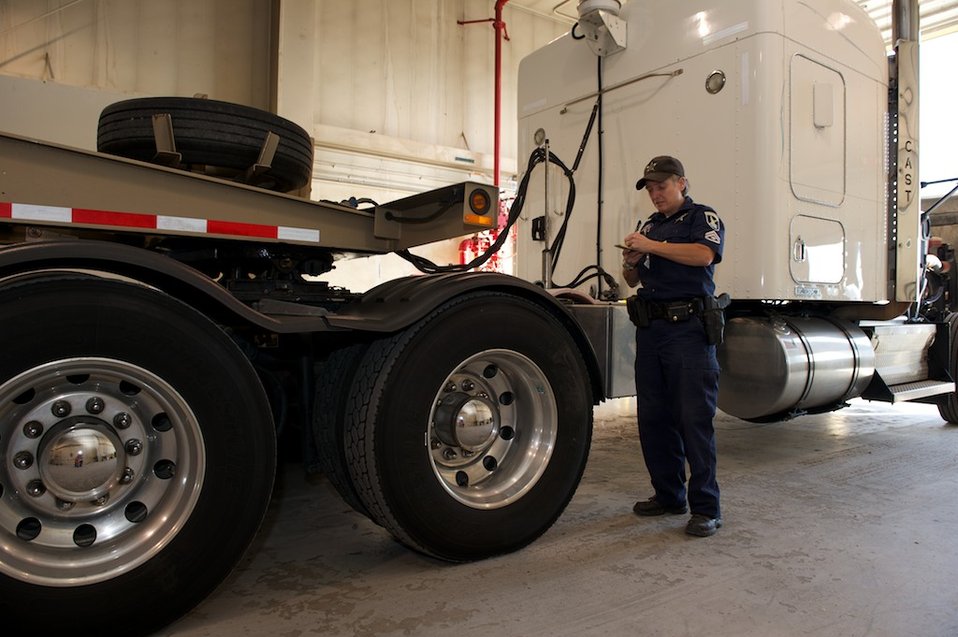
10,000th Shipment

The 10,000th shipment of TRU waste bound for WIPP. The waste was shipped from the Advanced Mixed Waste Treatment Project.